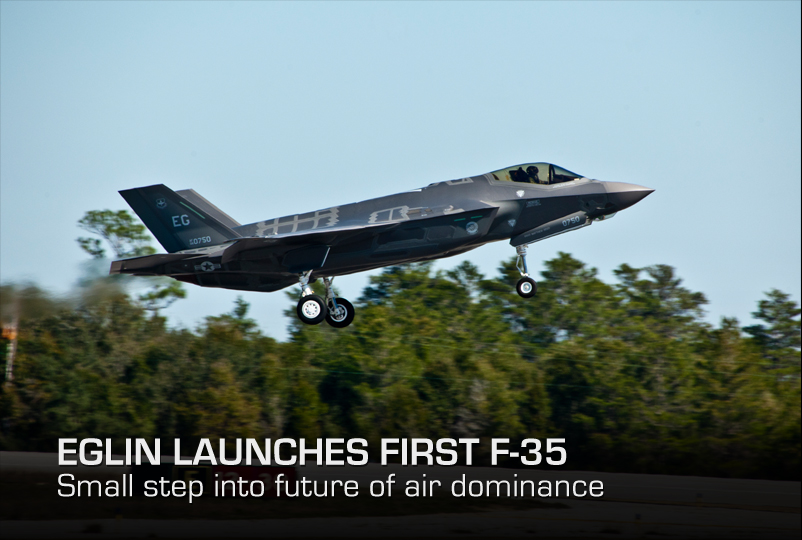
Eglin launches first F-35